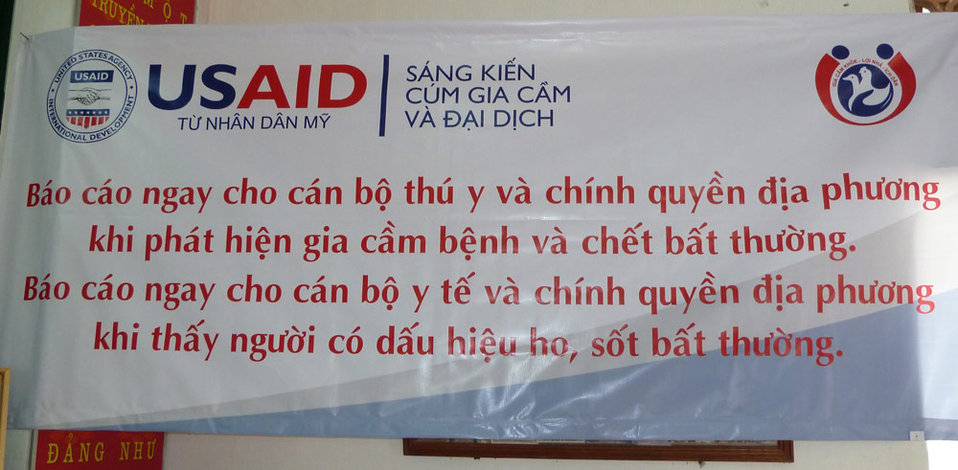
Residents in Vietnam's Tien Ngoai Commune, Duy Tien District, Ha Nam Province, discuss ways to prevent and control avian and pandemic influenza.